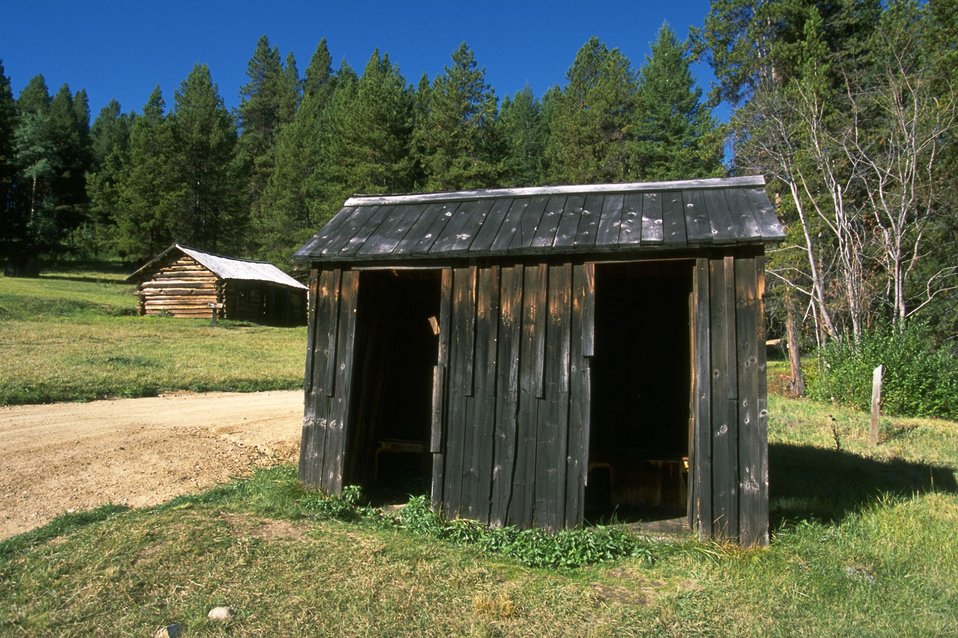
Garnet Ghost Town--outhouse that serviced the Wells Hotel